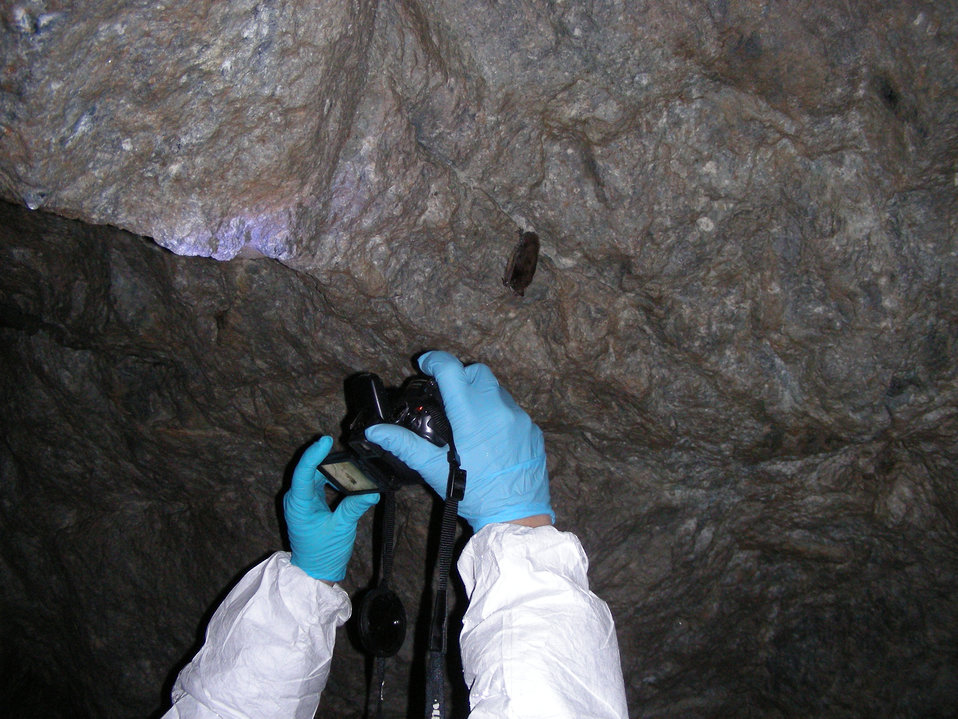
USFWS Biologist studying bat

Little brown bat with white-nose syndrome in Greeley Mine, Vermont, March 26, 2009